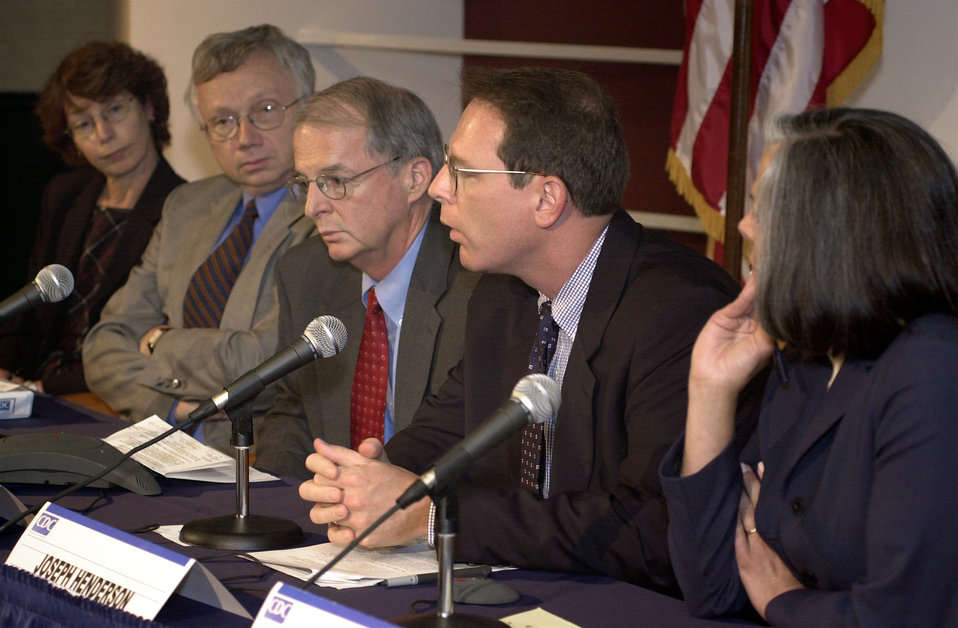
Centers for Disease Control and Prevention Bioterrorism Preparedness Press Briefing, August 27, 2002.